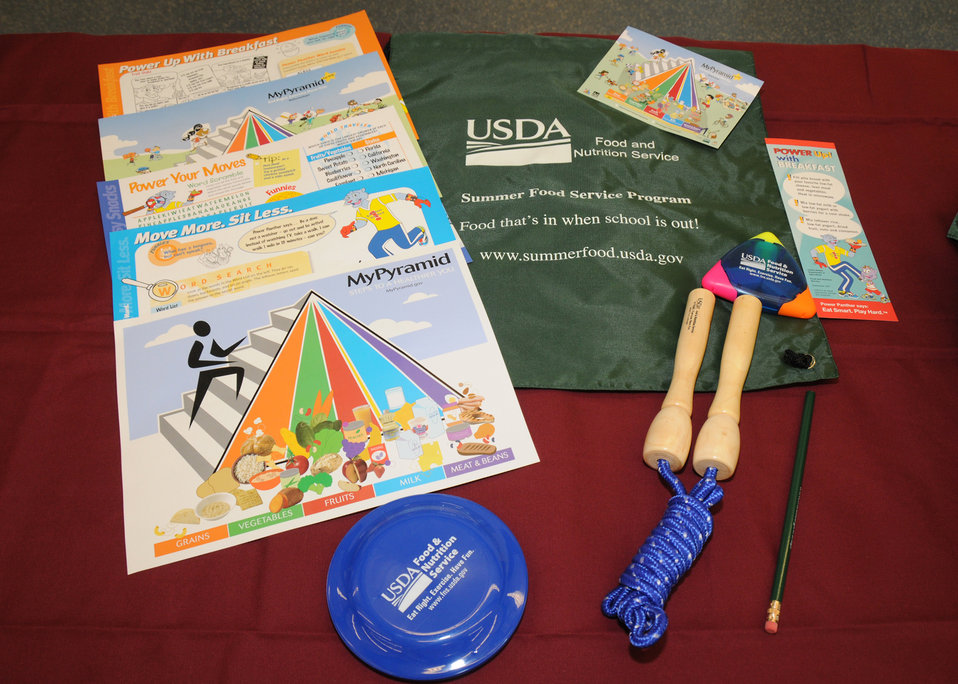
Food Nutrition Service provided backpacks to the Alice Deal Middle School 6th graders at the promotion of the “Healthy Schools” legislation passed by the D.C. Council. The backpacks contained a jump rope, pencil, frisbee, highlighter, and pamphlets about healthy eating and good exercise. The event took place in Washington, D. C., on Thursday, May 13, 2010. USDA photo 10di1358-04.